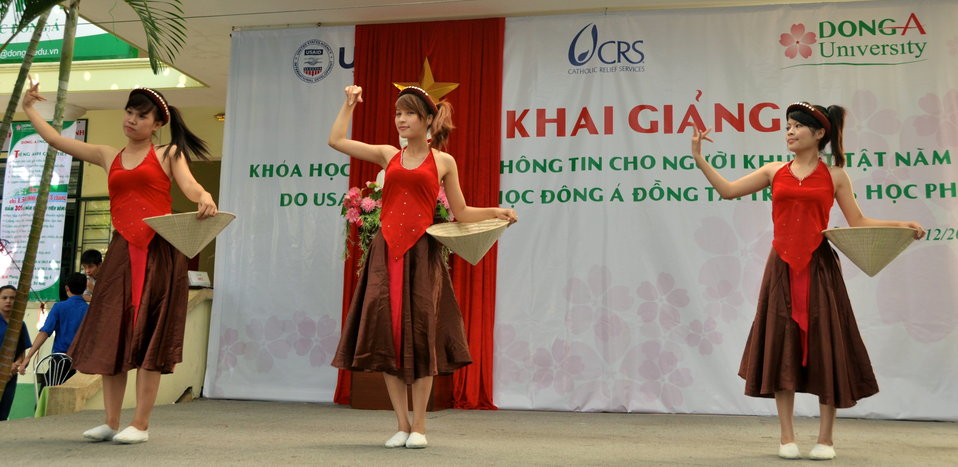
Dong A University joins with USAID and CRS to mark the International Day of Persons with Disabilities in Danang

Photo: @USAIDVietnam
December 3, 2012